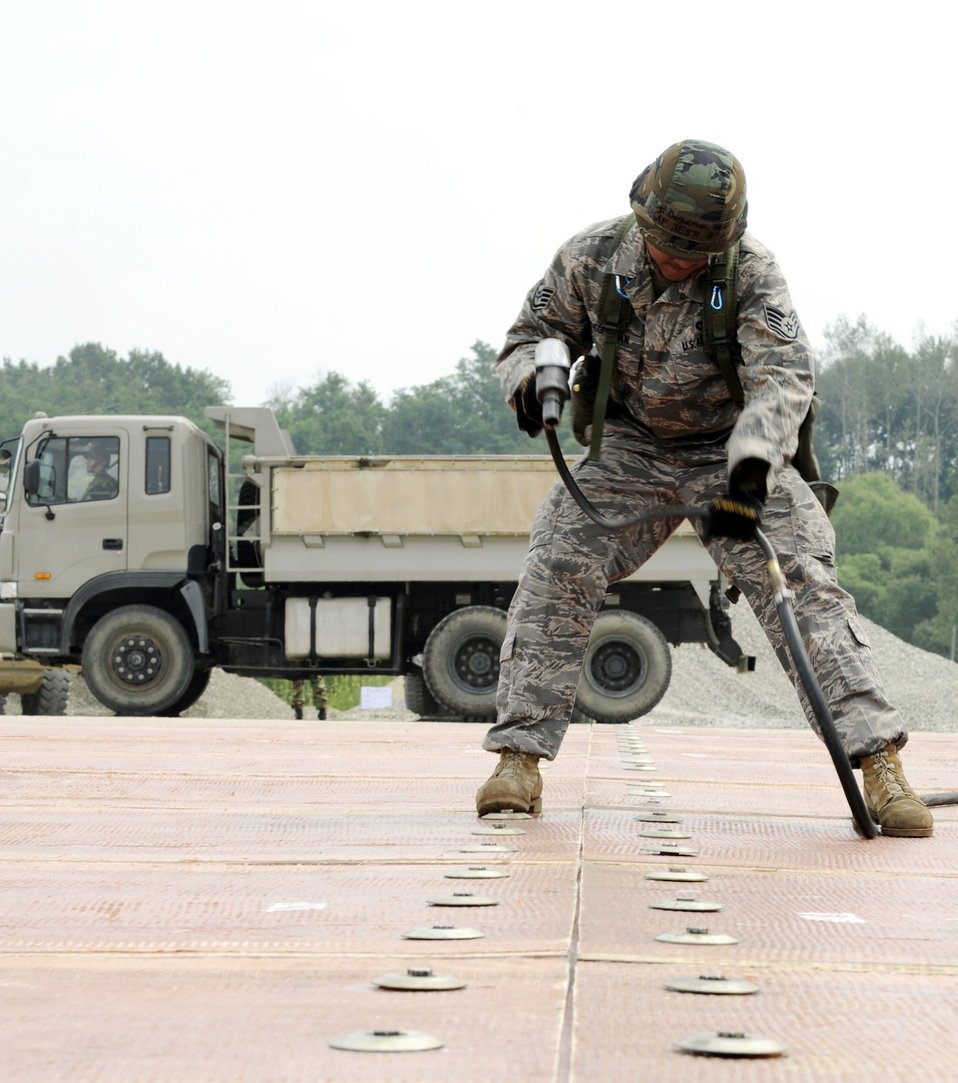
Osan AB's airfield damage repair team train with South Korean air force

Staff Sgt. William Deguzman uses an air compressor to connect two folded fiberglass mats together on a simulated runway Aug. 19 at Jungwon Air Base, South Korea. The 30-foot long, 54-foot wide foot mats are used to quickly repair runway damage, and can be connected to cover a large area. This process was part of a joint combined rapid runway repair training exercise with Airmen from the South Korean air force's 19th Tactical Fighter Wing and 91st Air Civil Engineer Group. Sergeant Deguzman is assigned to the 51st Civil Engineer Squadron at Osan Air Base, South Korea.